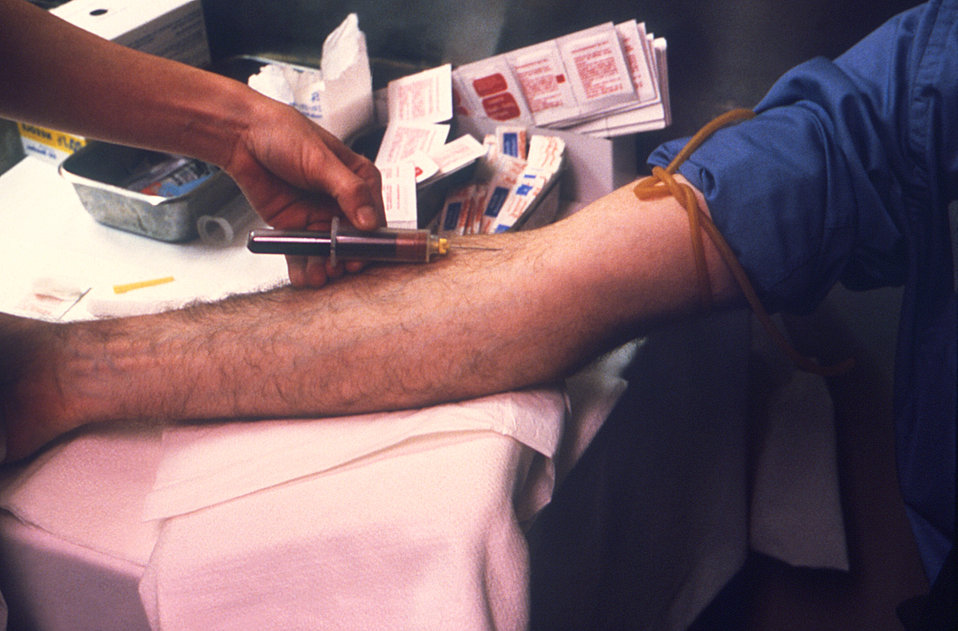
This phlebotomist was in the process of extracting a blood sample from a field-study volunteer's right antecubital fossa, during a 1979 Legionnaires' disease epidemiologic investigation.